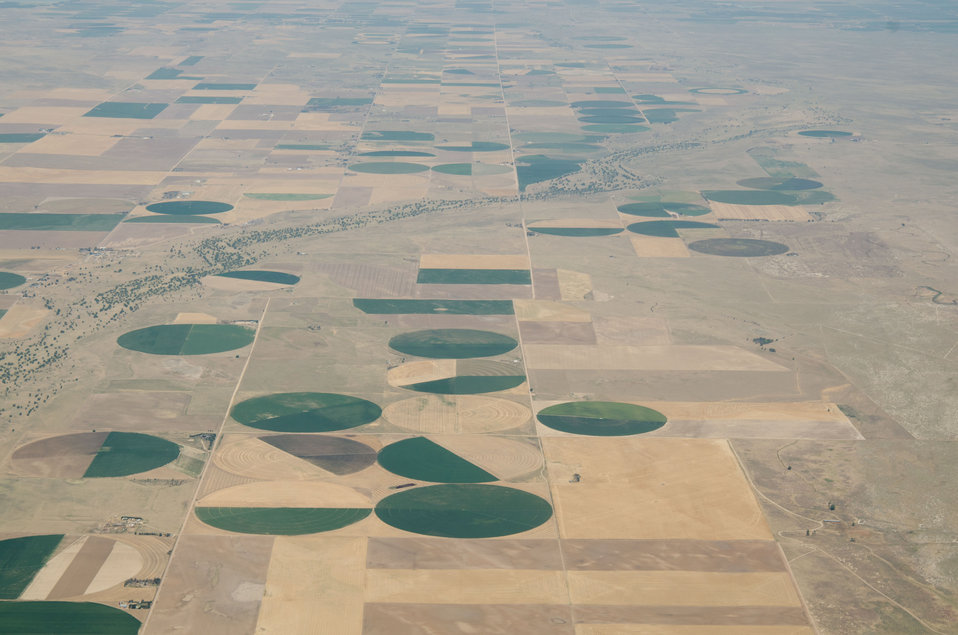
Aerial views of drought affected Colorado farm lands, near Wiggins, Colorado on Saturday, July 21, 2012. Green areas are irrigated, the yellow areas are dryland wheat crops.